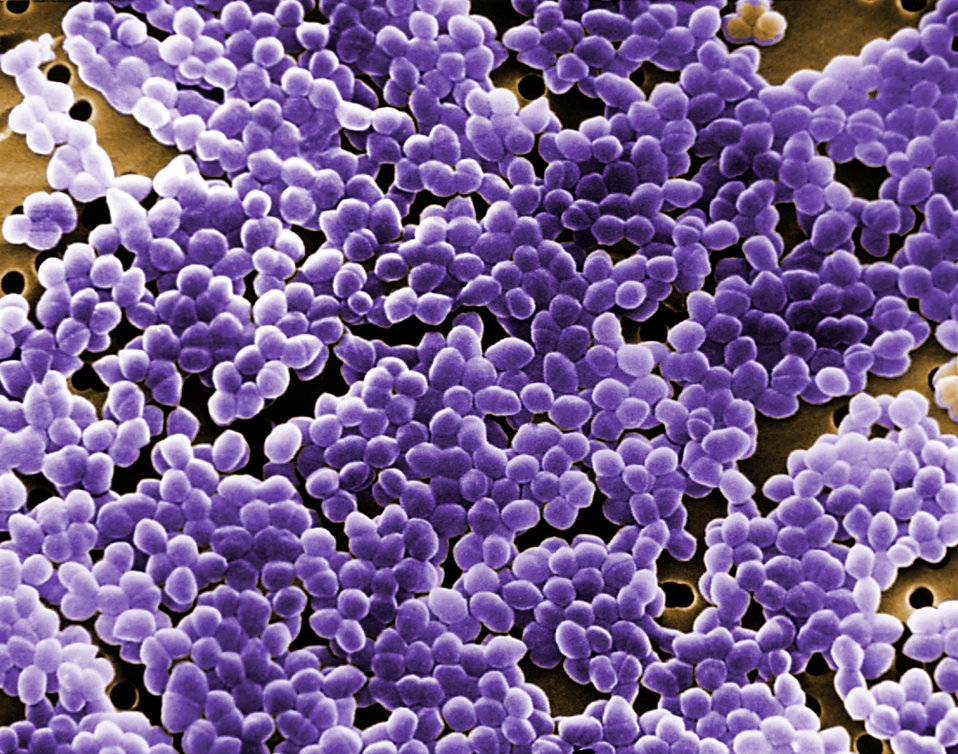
This digitally-colorized scanning electron micrograph (SEM) depicted large numbers of Gram-positive Enterococcus sp. bacteria.